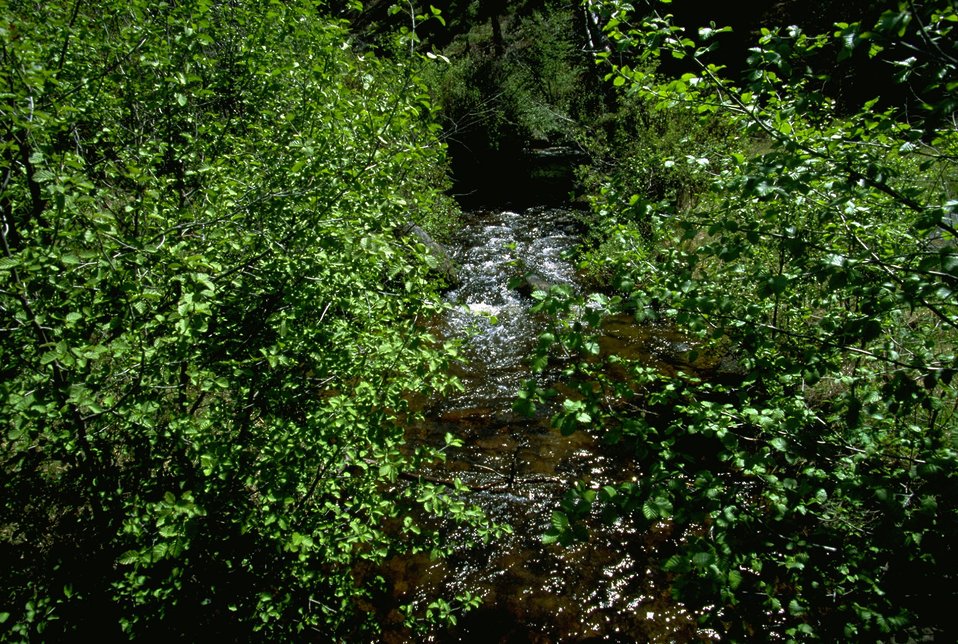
Moose Creek hidden among the trees